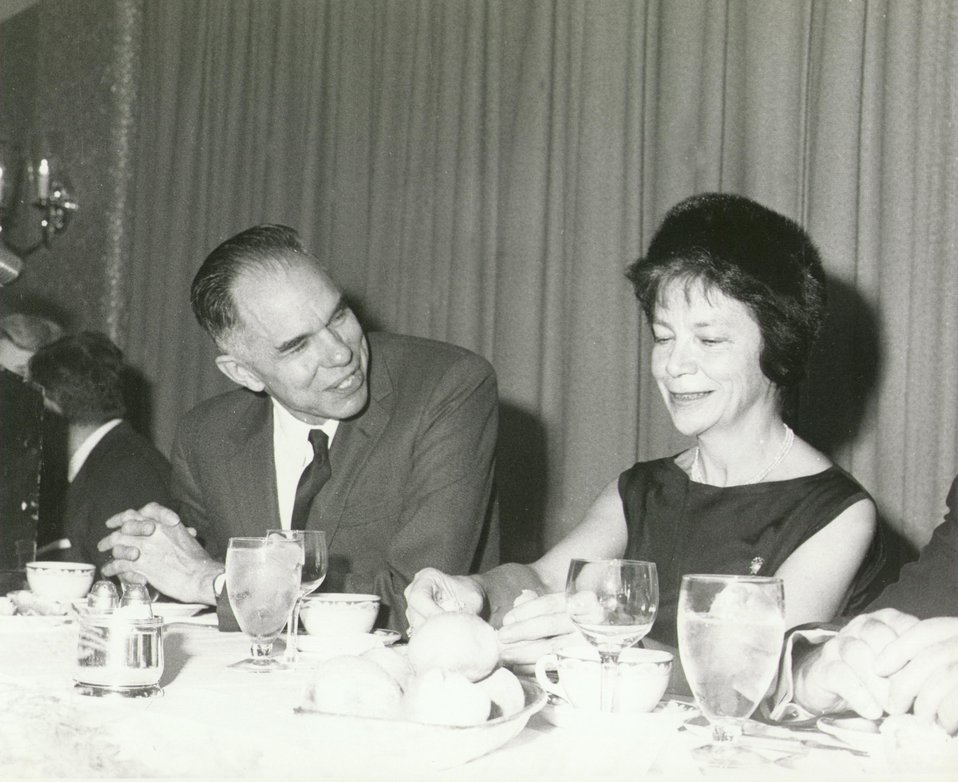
Fermi Award Ceremony for Teller in 1962.